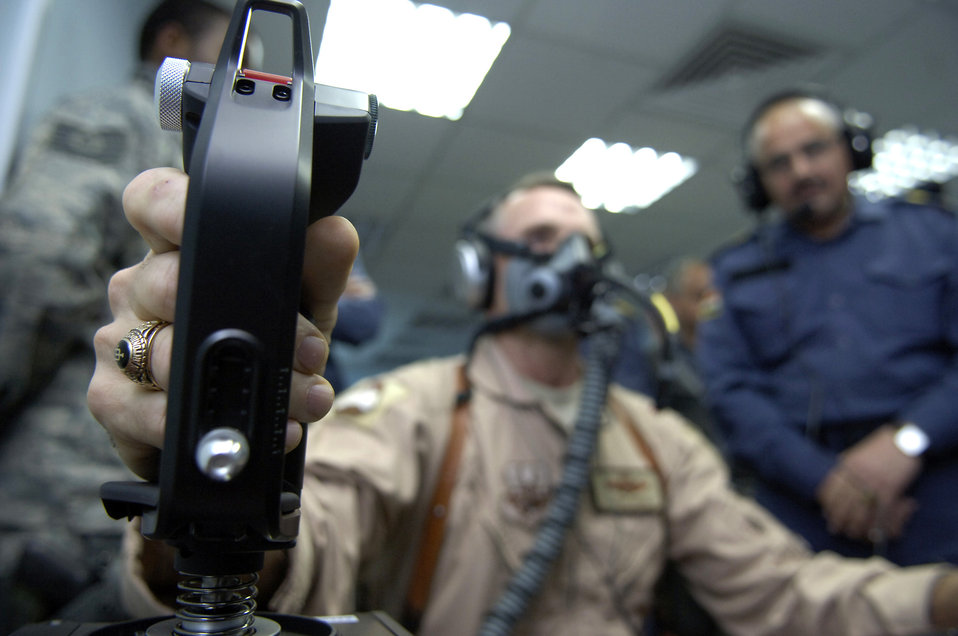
ROBD2

Brig. Gen. Anthony Rock makes minor flight corrections using the control stick during a demonstration of the Iraqi air force's first reduced oxygen breathing device March 14, 2011,in Baghdad. The ROBD2 is the second generation of a device invented and patented by the Navy designed to take the place of the altitude chamber for pilot refresher training. General Rock is the 321st Air Expeditionary Wing commander and Iraq Training and Advisory Mission-Air director.